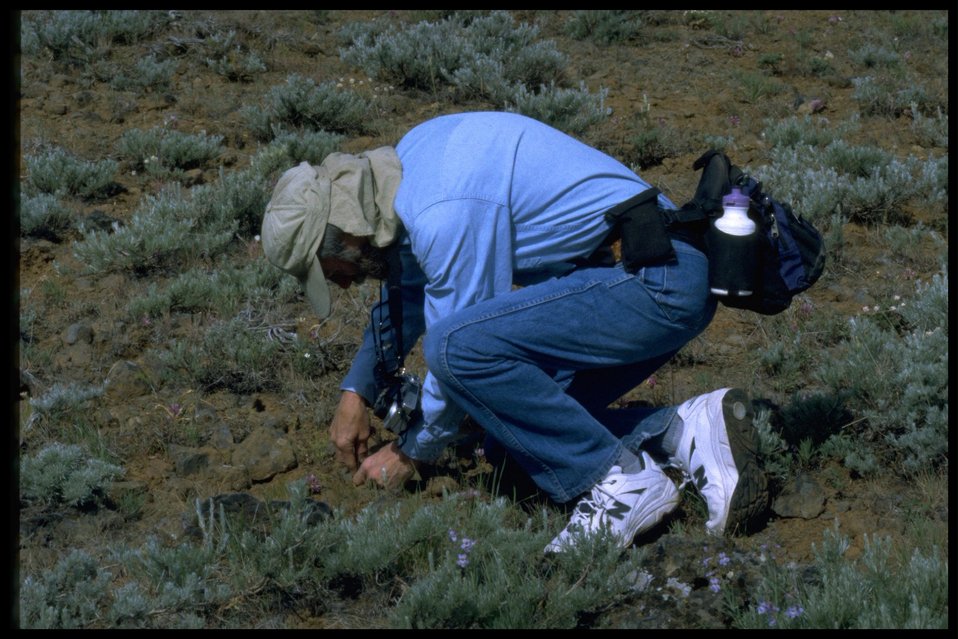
Botanist Clair Button collecting specimen.